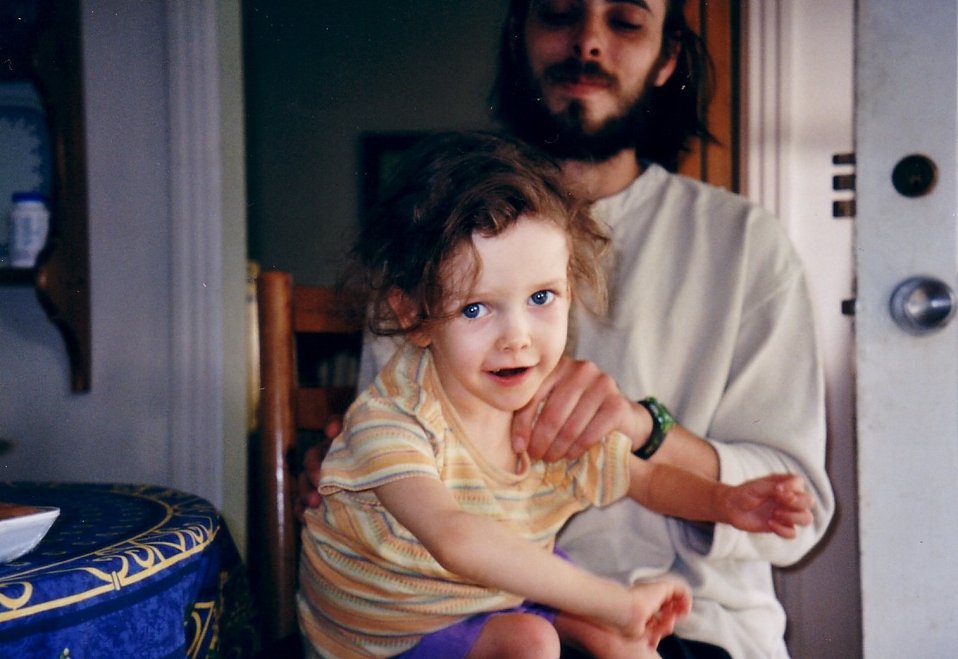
GA1 posture2